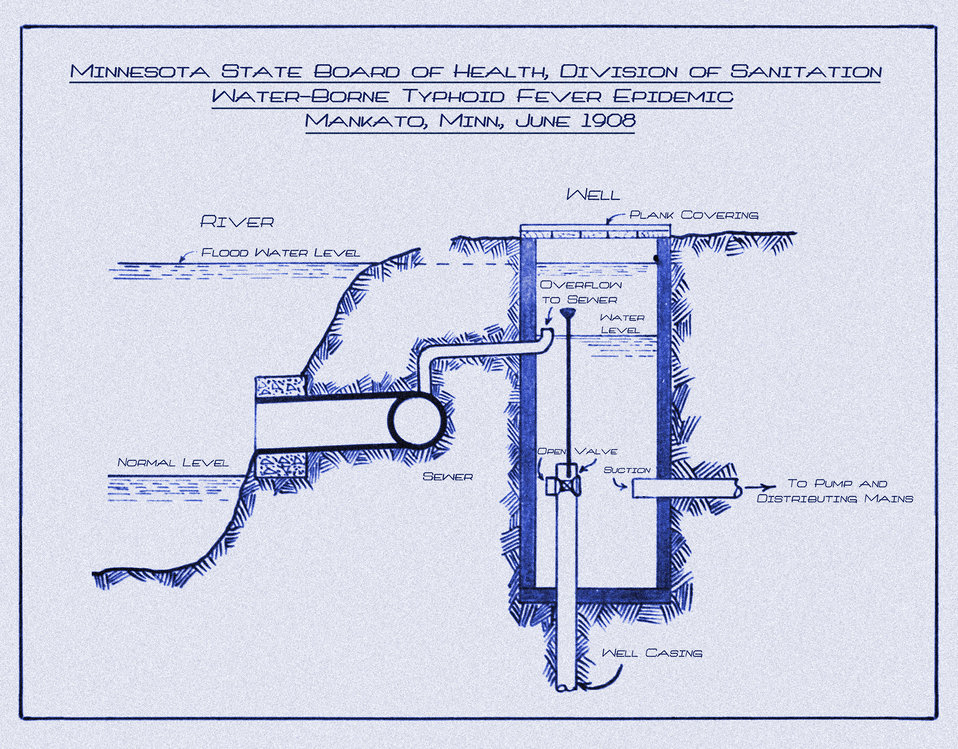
This historic 1921 diagrammatic sketch, which had been digitally enhanced and colorized, depicted the Mankato, Minnesota municipal well, and its connections to sewers and the Minnesota River. River flooding contributed to a water-borne typhoid fever epidemic in June, 1908.